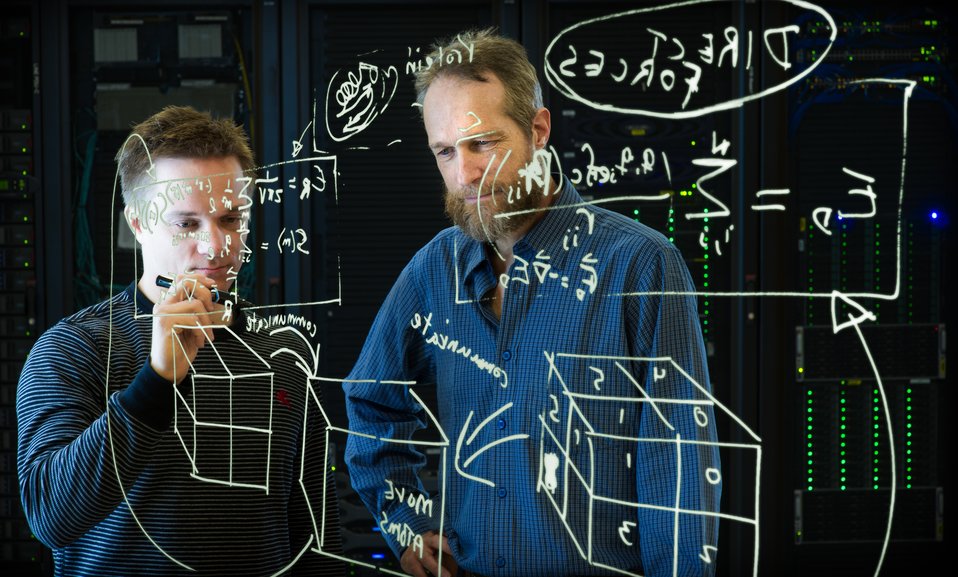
CHARMM, Chemistry at Harvard Molecular Mechanics

February 11, 2013 - NREL scientists Michael Crowley and Antti-Pekka Hynninen have developed algorithms that speed calculations done by the software tool CHARMM by several orders of magnitude, using code such as the one pictured. Using NREL's new petascale supercomputer housed in the Energy Systems Integration Facility, they can simulate the motions of thousands of atoms, leading to greater understanding of how molecular models work.